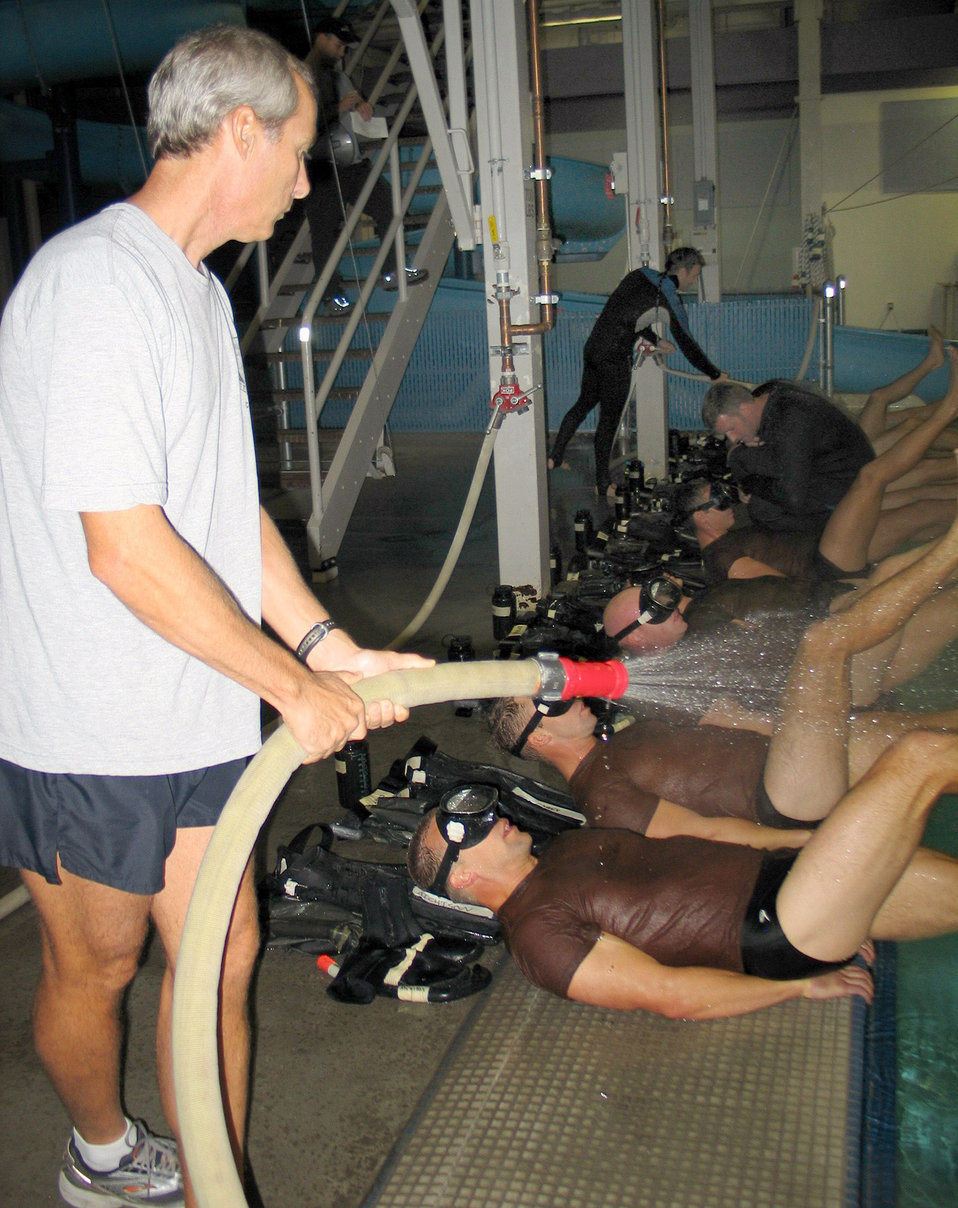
Combat rescue officers ready for field

During the second phase of the selection program at Fairchild Air Force Base, Wash., Ross Kilbride hoses combat rescue officer candidates with ice-cold water to break their concentration. The six-day course is a stream of physical, mental and psychological evaluations designed to train candidates to lead combat operations as direct combatant commanders. Mr. Kilbride is a Combat Rescue Officer/Pararescue Indoctrination course instructor at Lackland AFB, Texas.